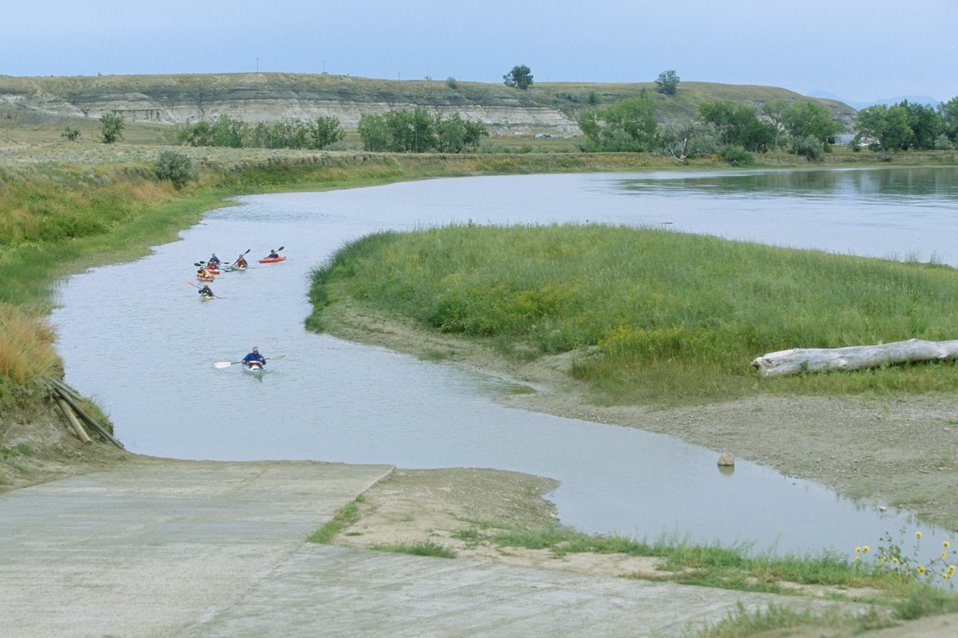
Floating the Upper Missouri River